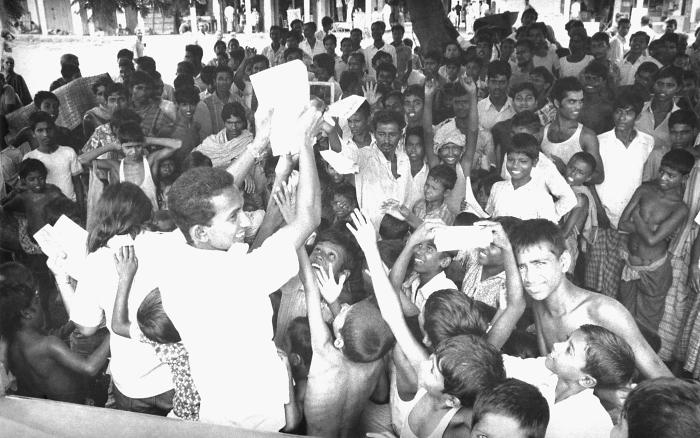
These smallpox eradication team members were photographed as they were in the process of distributing smallpox information leaflets to a large group of villagers, primarily made up of children, who could be seen reaching for the papers held overhead. The last known case of naturally occurring smallpox, a young girl named Rahima Banu, was reported by an 8 year old girl, who was paid her 250 Taka reward. All rewards were handed out in a public place.